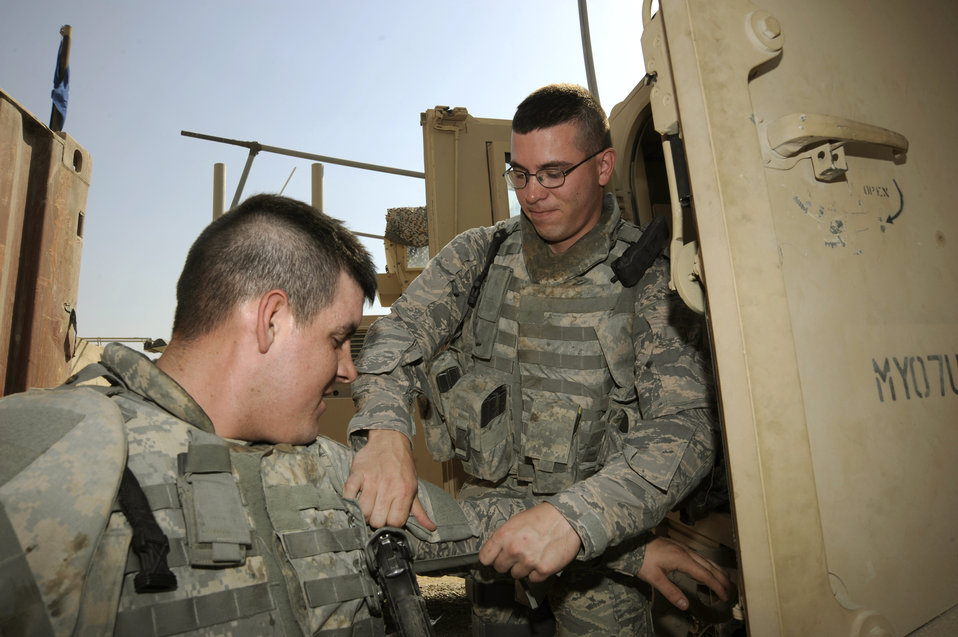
Security forces Airmen help secure future of Iraq

Senior Airman Christopher Cable (right) helps Senior Airman Jason Gregory don his individual body armor protection Aug. 22, 2009, at Camp Stryker, Iraq. Both Airmen are assigned to the 732nd Expeditionary Security Forces Squadron Detachment 2 Police Transition Team, which performs outside-the-wire missions training Iraqi policemen and conducting intelligence operations to enhance the security of the country. Airman Gregory is deployed from Langley Air Force Base, Va., and is a native of New Caney, Texas, and Airman Cable is deployed from the U.S. Air Force Academy in Colorado and is a native of Niagara Falls, N.Y.